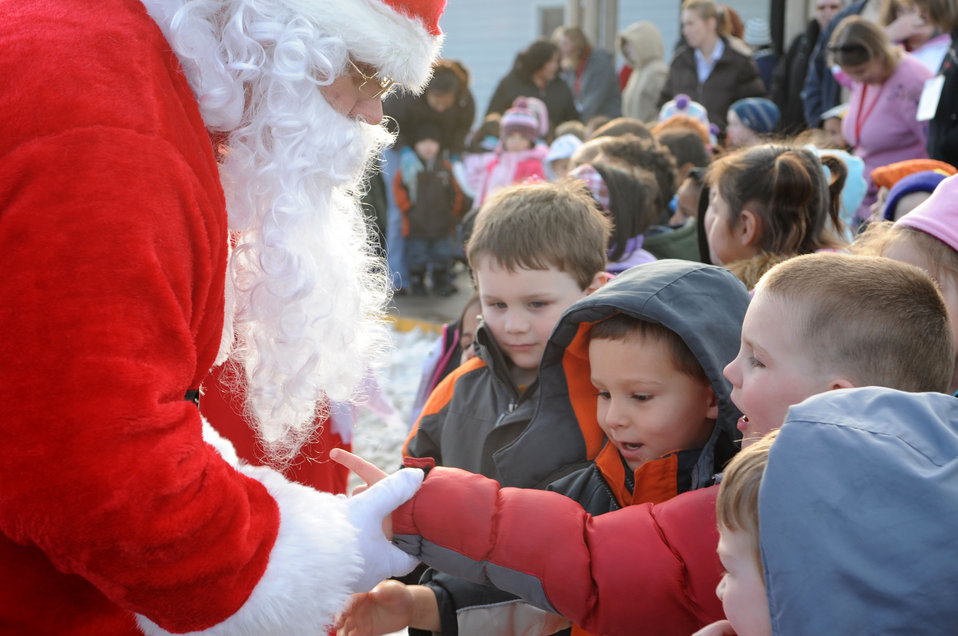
Ellsworth members support Angel Tree program

Children of the Youth and Family Services child care center greet Santa Dec. 17, 2009, in Rapid City, S.D. Santa, also known as Master Sgt. Cary Loeffler, the 28th Operations Support Squadron aircrew fight equipment assistant superintendent, and his wife began the Angel Tree program at Ellsworth Air Force Base, S.D., by introducing a traveling tree throughout the 28th OSS.